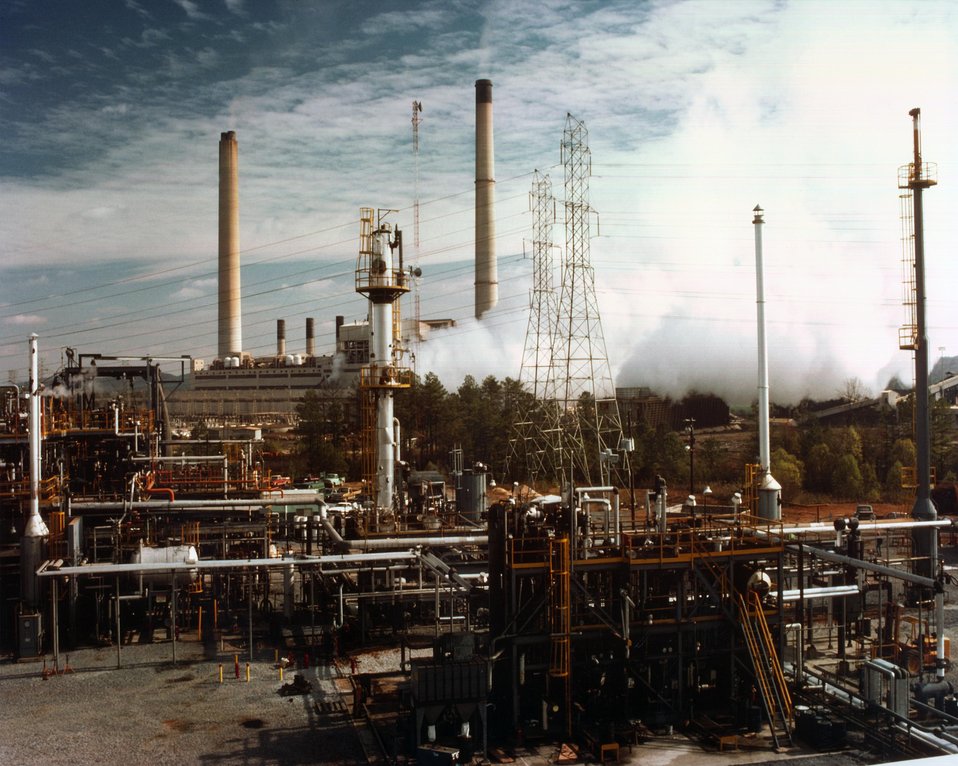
GENERAL OVERALL VIEW OF ADVANCED COAL LIQUEFACTION R&D FACILITY.